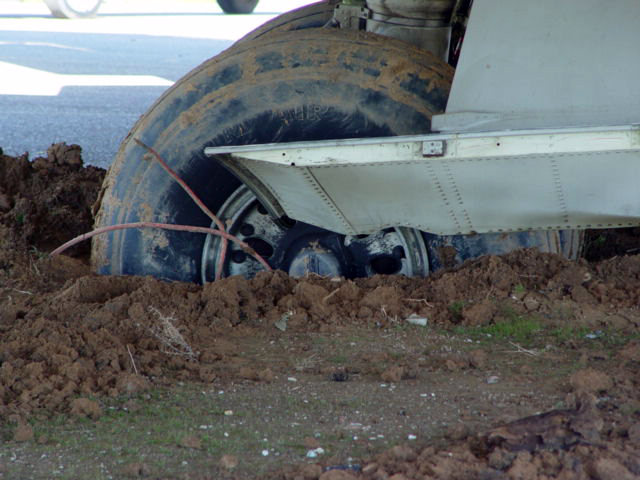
Stuck in the mud

KIRKUK AIR BASE, Iraq -- A mail cargo plane taxing here turned too soon and became mired in about two-and-a-half feet of mud. The aircraft was stuck between two taxiways while Airmen spent more than 40 hours removing it.